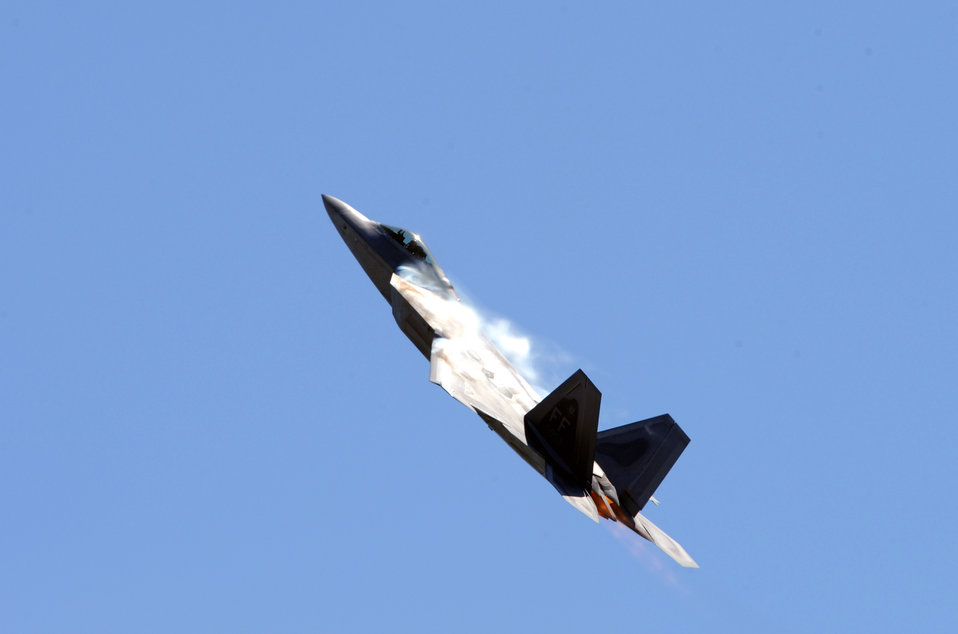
Challenging the sky

An F-22 Raptor streaks above the crowd May 15, 2010, at the 2010 Joint Service Open House at Joint Base Andrews, Md. The open house allowed members of the public an opportunity to meet and interact with the men and women of the Armed Forces.